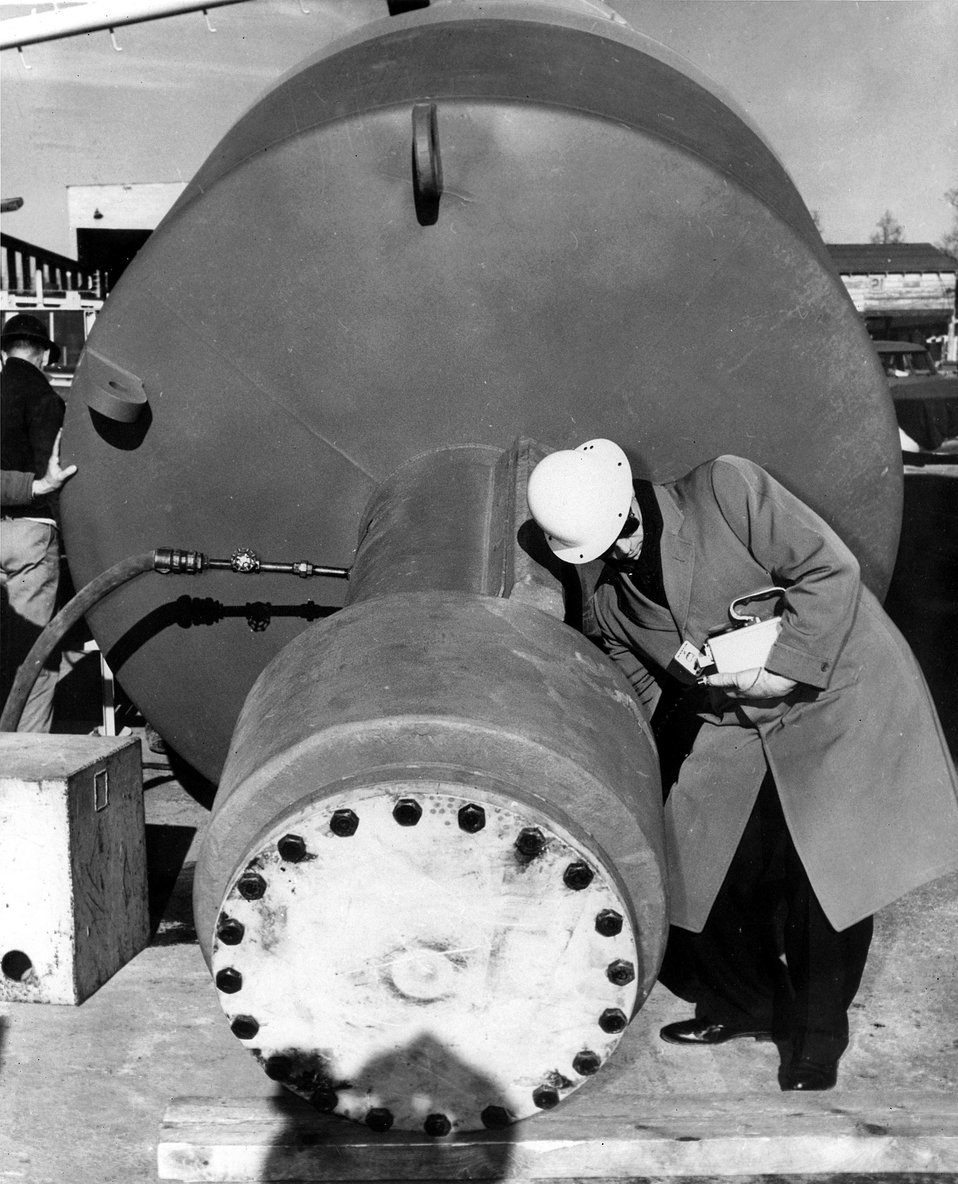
Here a Marietta Corporation official measures the radiation coming from the Coast Guard's atomic buoy counterweight after installation of a SNAP-7A strontium-90 thermonuclear generator, at Curtis Bay, MD, December 15, 1961.